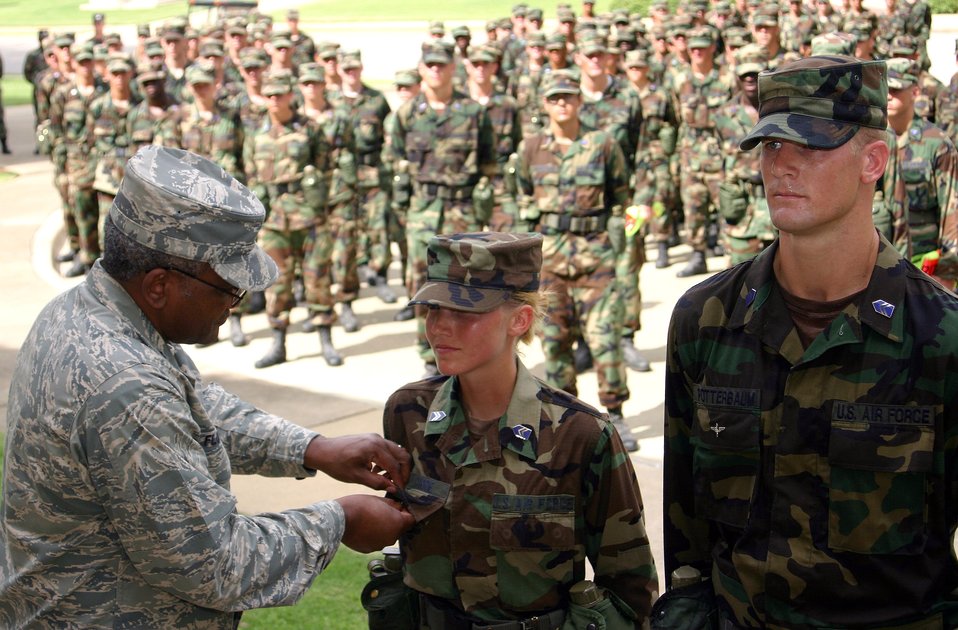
ROTC cadets complete 'Props and Wings Challenge'

Brig. Gen. Alfred Flowers, Air Force Officer Accessions and Training commander, pins the Prop and Wings pin on Cadet Group Commander Jefre Potterbaum (right) and Deputy Group Commander Ashley Currie July 17 at the conclusion of the Prop and Wings Challenge at Maxwell Air Force Base, Ala. The challenge tested more than 330 cadets with mental and physical activities during the 27-day field training event.